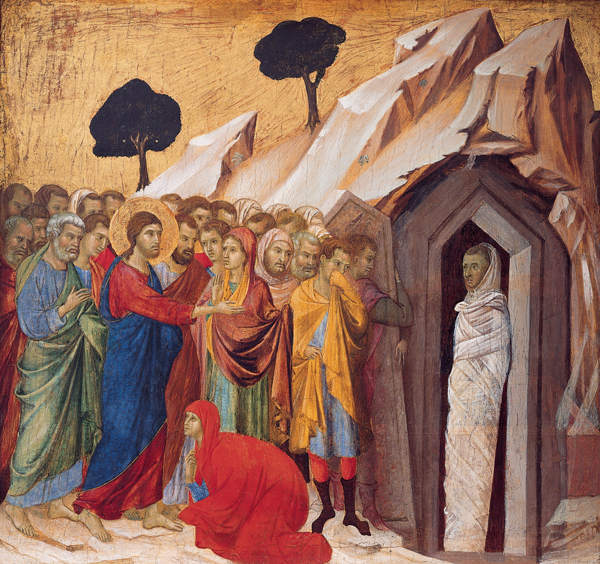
'The Raising of Lazarus', tempera and gold on panel by Duccio di Buoninsegna, 1310–11, Kimbell Art Museum